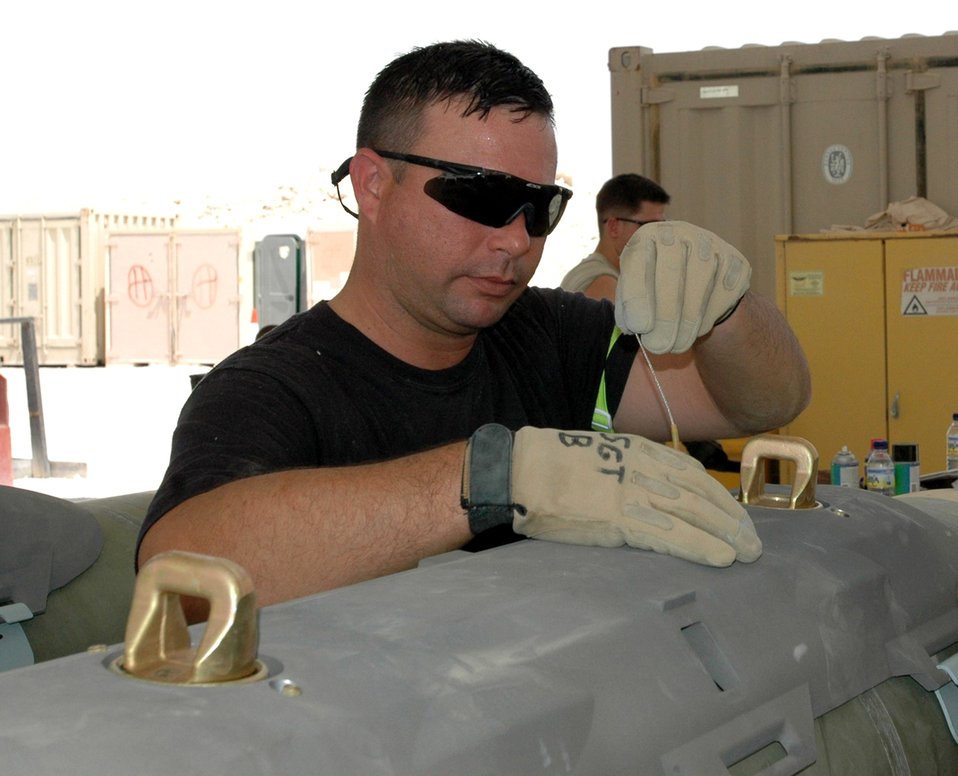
Expeditionary Airmen build bombs

Staff Sgt. Donald Buono fuzes a guided bomb unit-31. Sergeant Buono is with the 379th Expeditionary Maintenance Squadron's ammo flight at a deployed location in Southwest Asia.